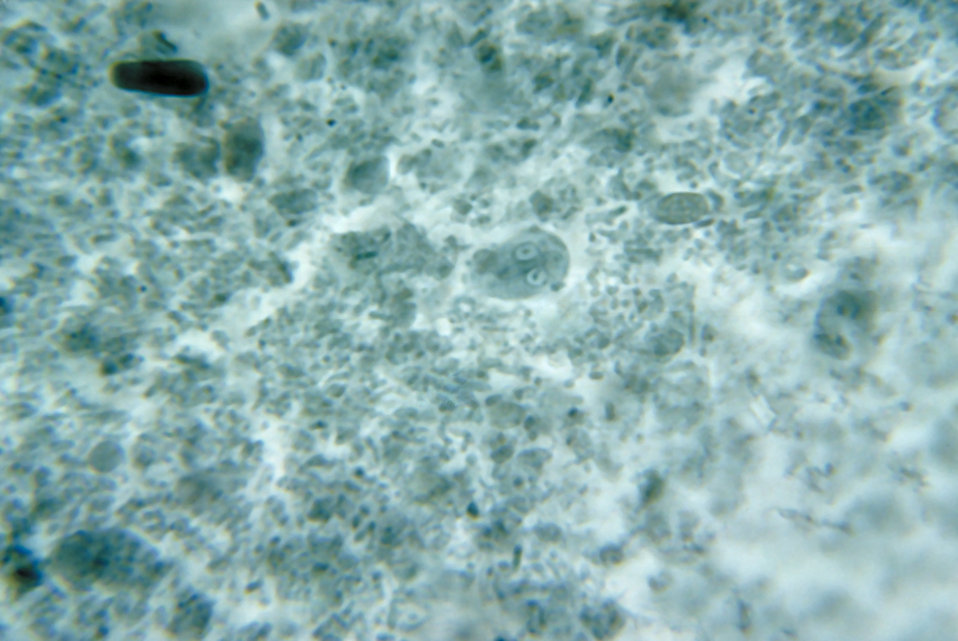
Giardia lamblia trophozoite. Chlorazol black stain. Parasite.